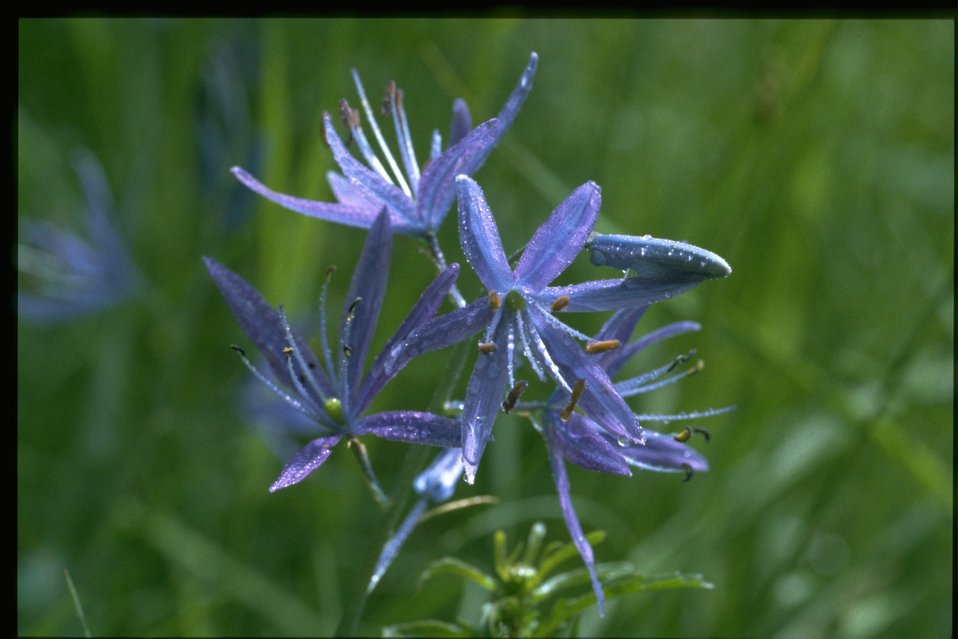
Medium shot of Camassia quamash.